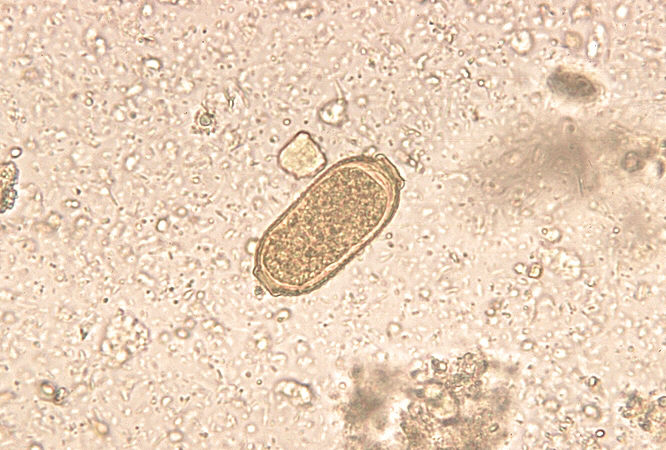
Capillaria philippinensis egg. Unstained mount of formalin-preserved feces. Parasite.